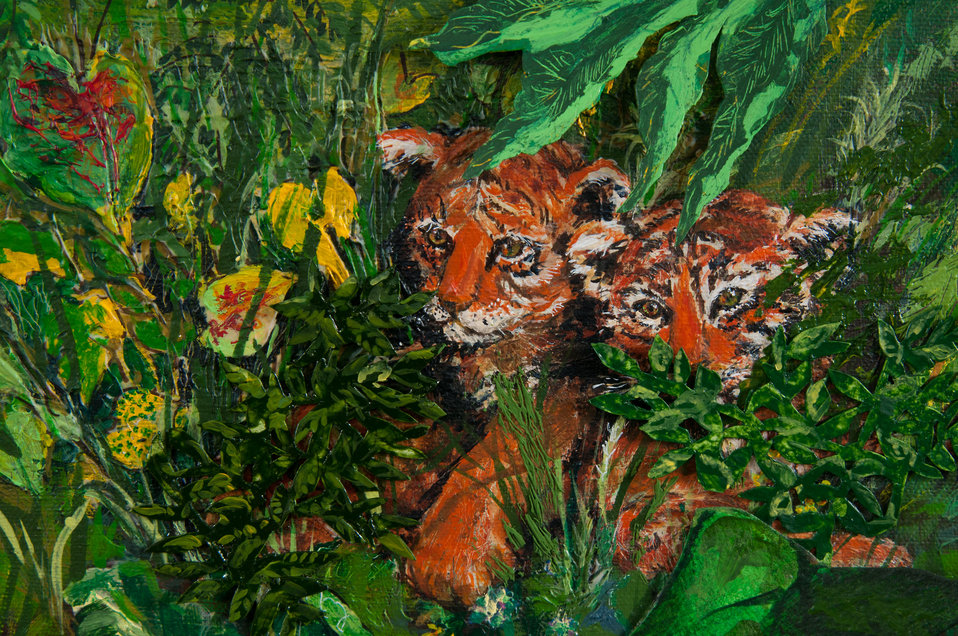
Online Viewer's Choice entries of the 2013 Art & Agriculture, Tuesday, July 9, 2013, in the South Building, Washington, D.C. Themes were expressed by employees from across the department and the contest was open to full-time and part-time USDA employees. Winning artwork will be displayed till the end of the year. U.S. Artistic expression is a creative outlet that is vital for an individual to grow and develop.